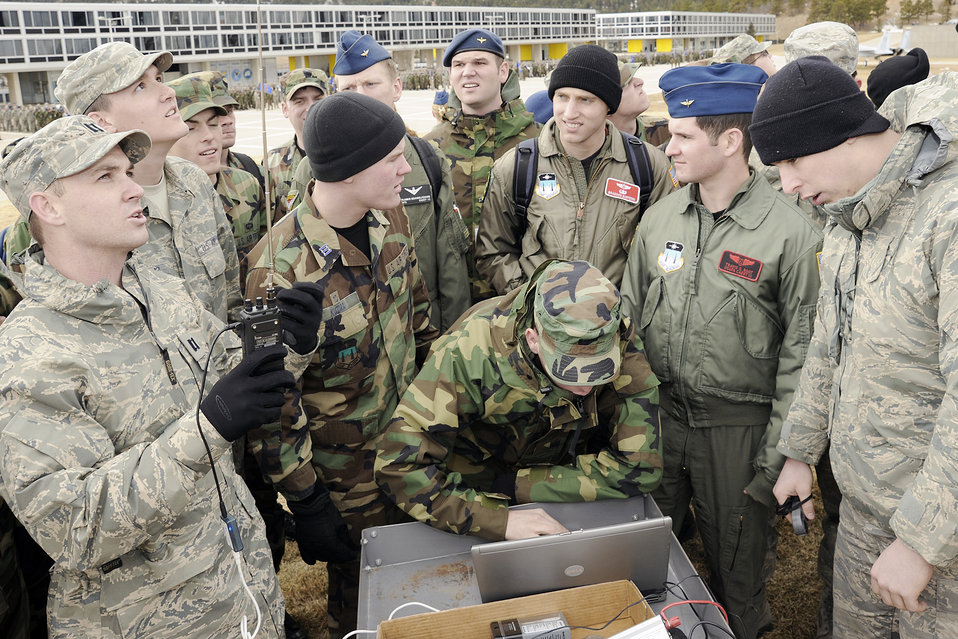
U.S. Air Force Academy, Colo-- Capt Paul Homan, Director of Meteorology, explains what the data being recorded by the radiosonde means as cadets track the weather balloon live from the terrazzo. The Meteorology 320 course, Introduction to Meteorology and Aviation Weather, teaches the fundamentals of meteorology with special emphasis placed on flight weather and its impact on aviation. The balloon was tracked to an altitude of 30,000 feet, giving a vertical profile of temperature, humidity and pressure of the atmosphere before it's signal was lost over eastern Colorado. The balloon most likely popped around an altitude of 65,000 feet and then floated down harmlessly under parachute to the ground.